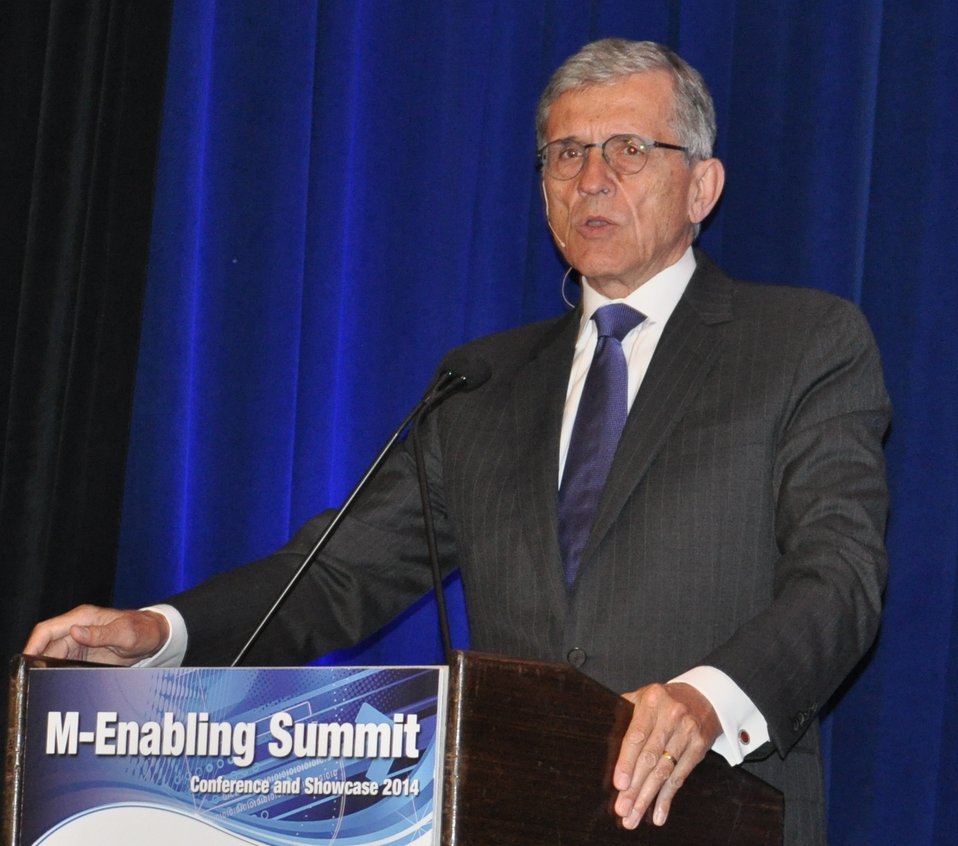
6.9.2014 Third Annual Chairman’s Awards for Advancement in Accessibility

Keynote Speech from Chairman Tom Wheeler